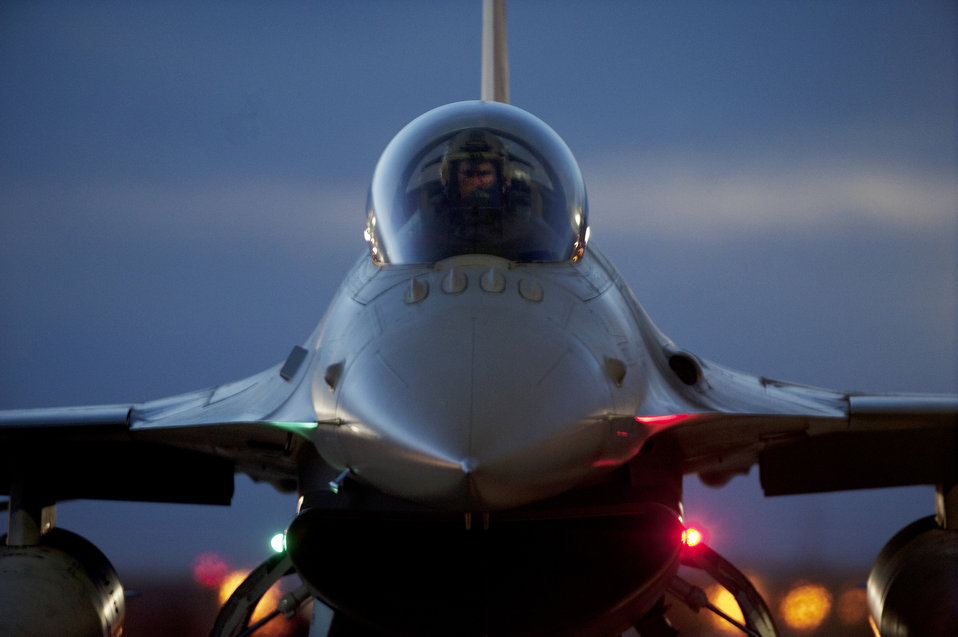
Taxi

An F-16 Fighting Falcon pilot waits to taxi out for a night mission during exercise Green Flag-West 13-02 at Nellis Air Force Base, Nev., Nov. 1, 2012. He is assigned to the 187th Fighter Wing, Alabama Air National Guard.